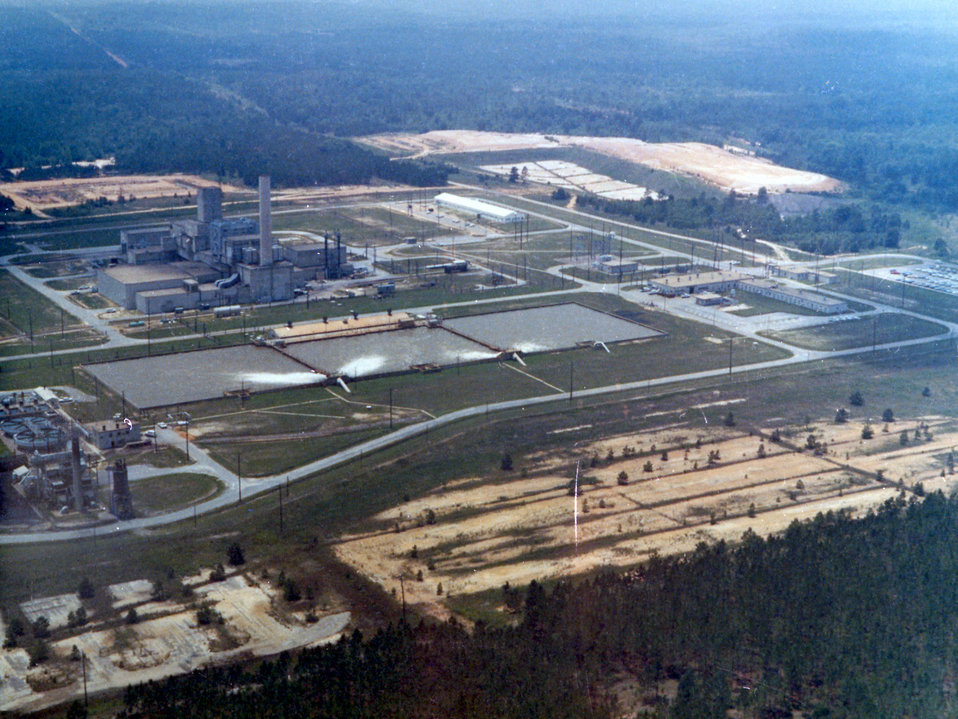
Workers Clean Up C Area as Added Value from Recovery Act P and R Reactor Projects

An aerial view of the C Area in 1969.